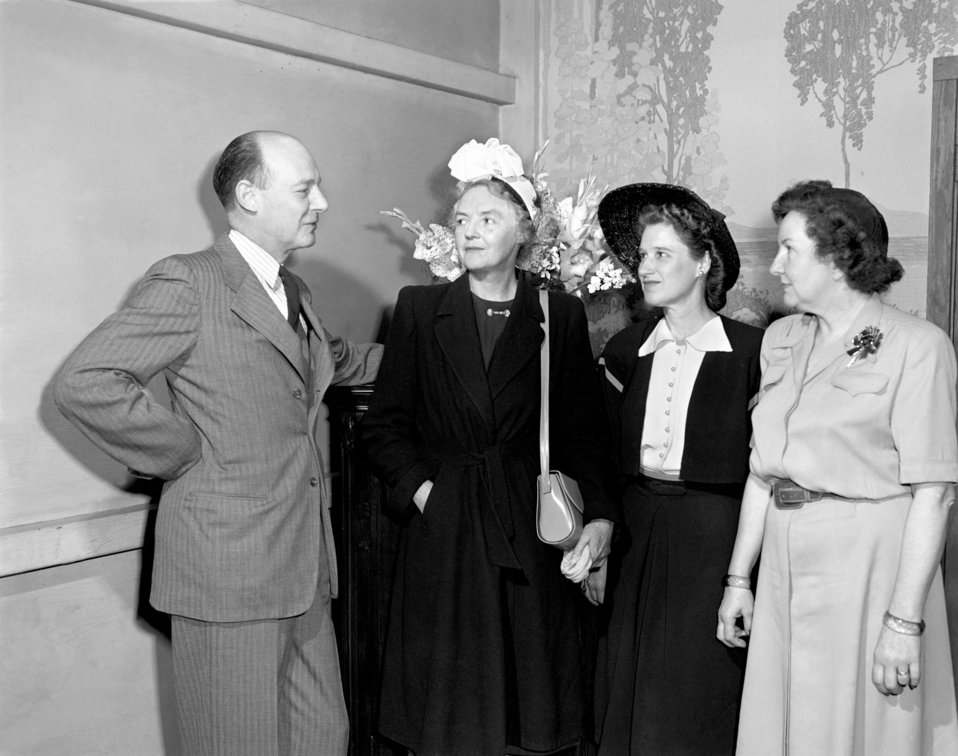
Mr. and Mrs. Hume Wrong, Mrs. Soe, and Mrs. Long Oak Ridge 1947

3410-3c DOE photo Ed Westcott 4-29-1947 Oak Ridge